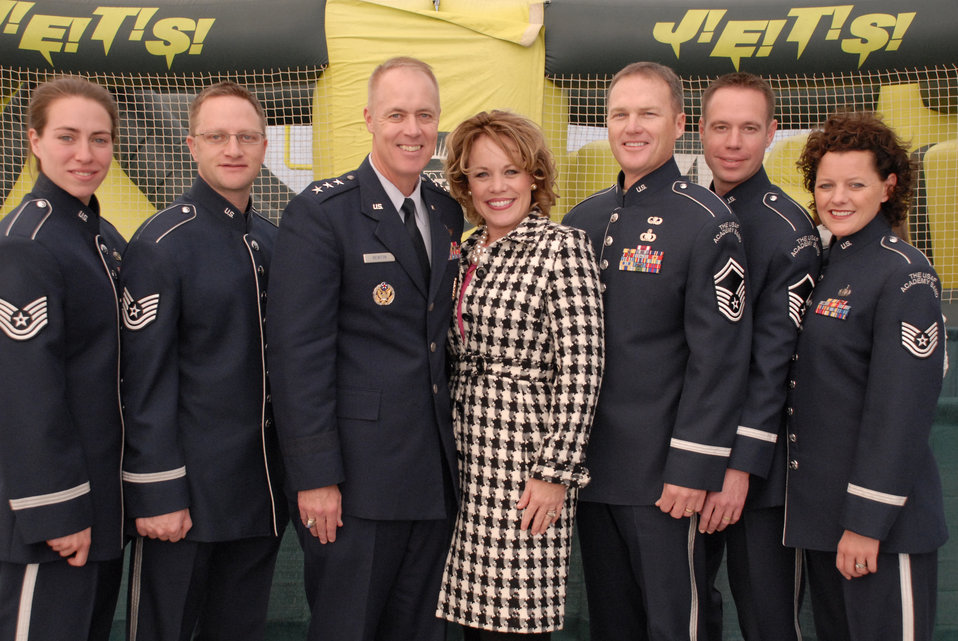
New York Jets Military Appreciation Game

Lt. Gen. Dick Newton, deputy chief of staff for manpower and personnel at Air Force Headquarters at the Pentagon, and wife Jody, pose with members of the U.S. Air Force Academy Band Blue Steel during the New York Jets military appreciation football game Nov. 9 at Meadowlands Stadium in New Jersey. Blue Steel opened the game with a performance of the National Anthem.